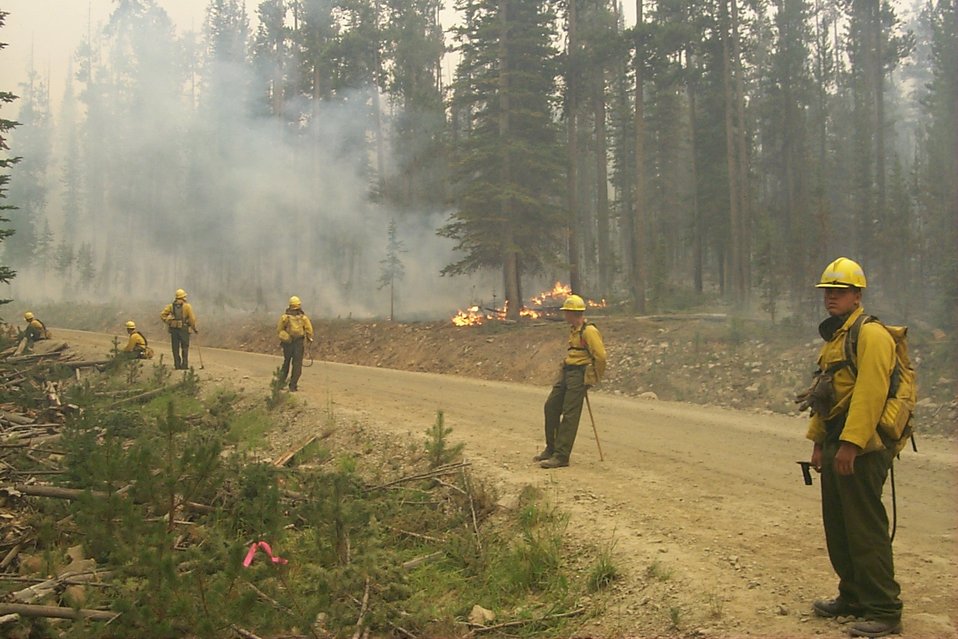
Fire fighters holding the line Fire Clearwater Fire Salmon Field Office USRD Upper Snake River District